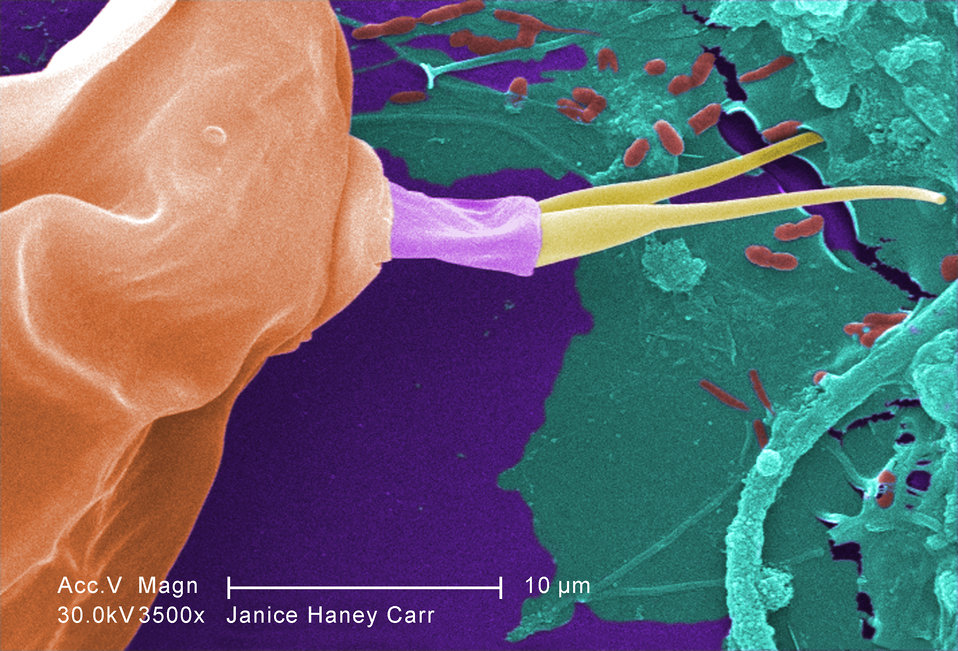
Under a moderate magnification of 3500X, this digitally-colorized scanning electron micrograph (SEM) of an untreated water specimen extracted from a wild stream mainly used to control flooding during inclement weather, revealed the presence of unidentified organisms, which included bacteria, protozoa, and algae. In this particular view, the caudal end of a single a single copepod-like microorganism was seen occupying the field of view. Also, if you look closely towards the upper right corner, you'll also notice the small grouping of bacteria, which had become enmeshed in a patch of biofilm.